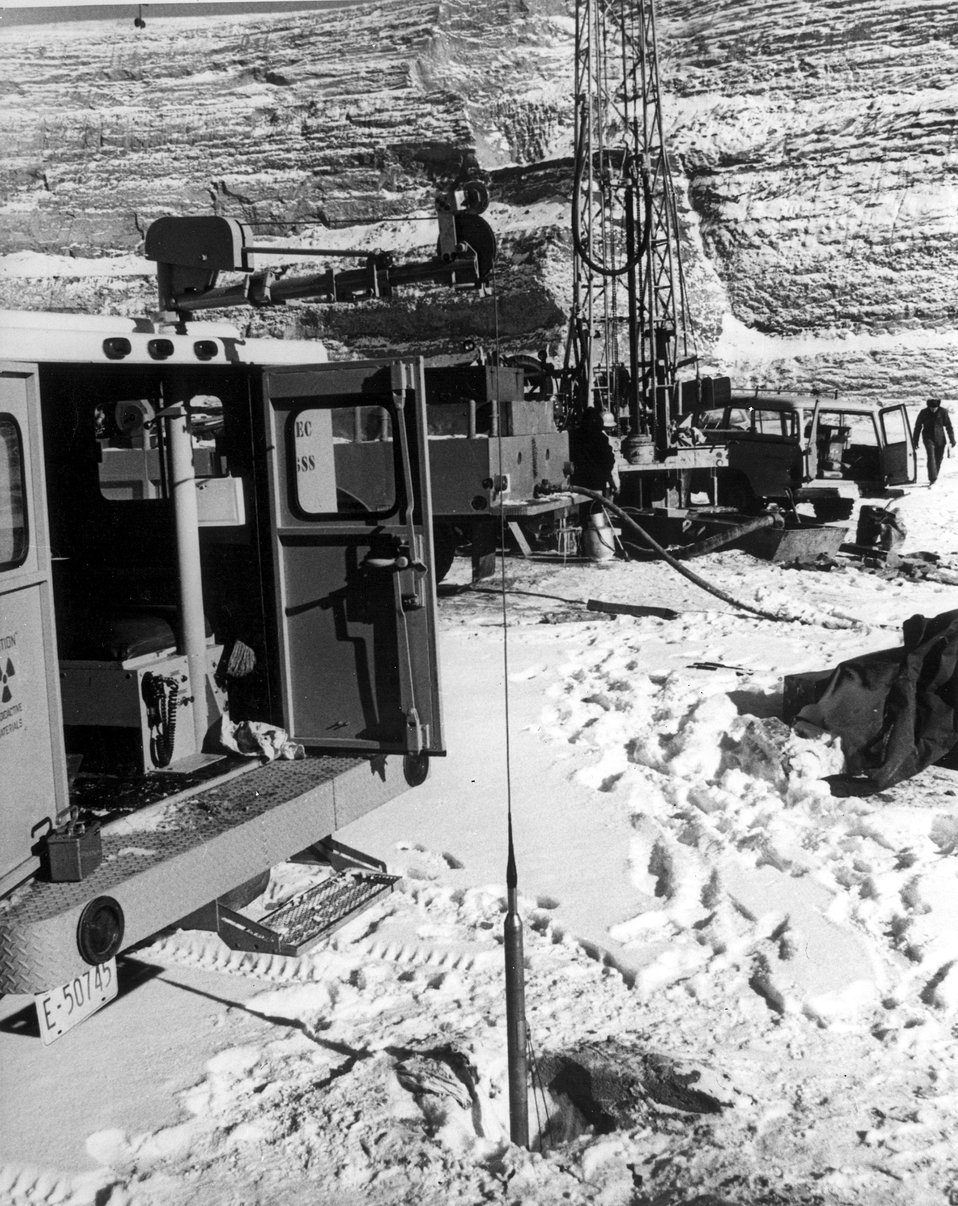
Drill holes are logged with a scintillation probe to measure natural gamma radiation in the borehole. c. 1968